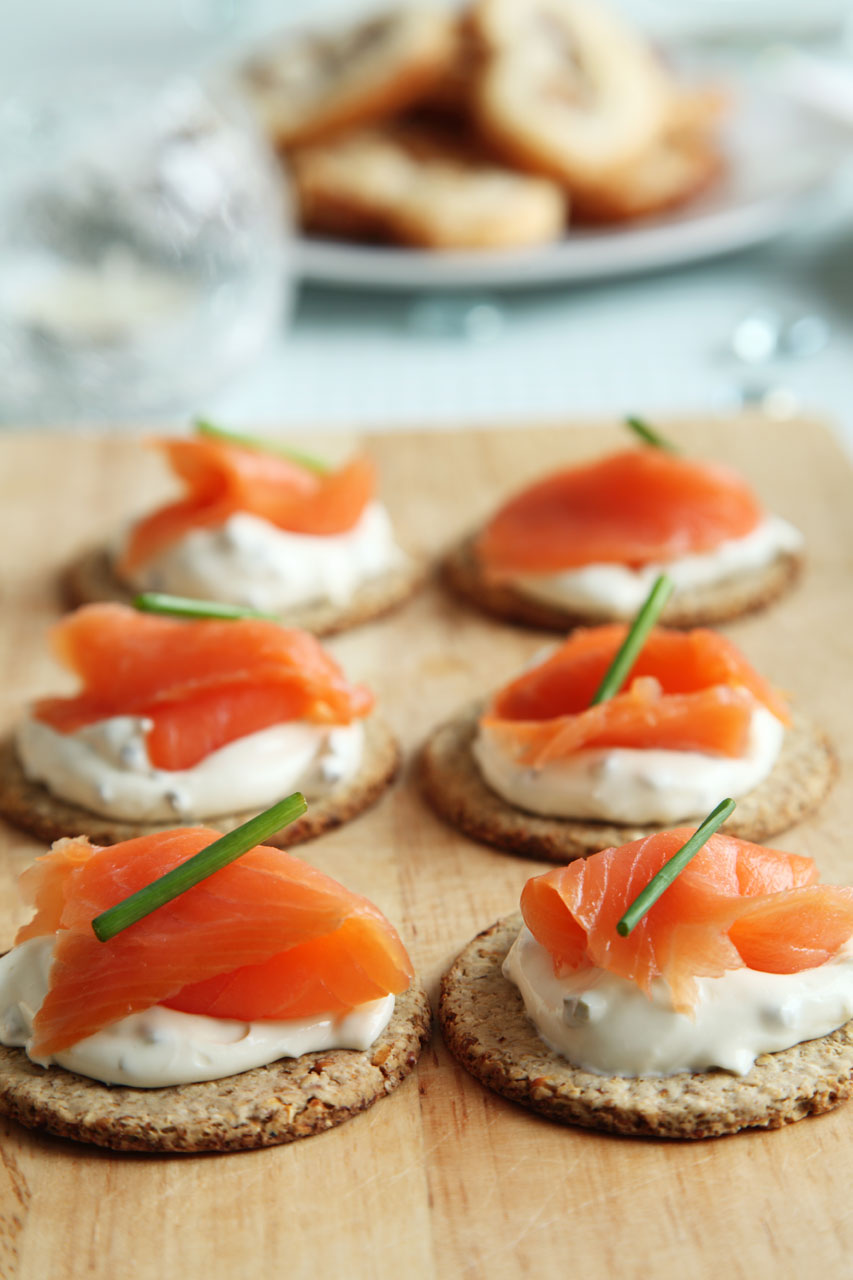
Smoked salmon canapes

Smoked salmon appetizer on table.